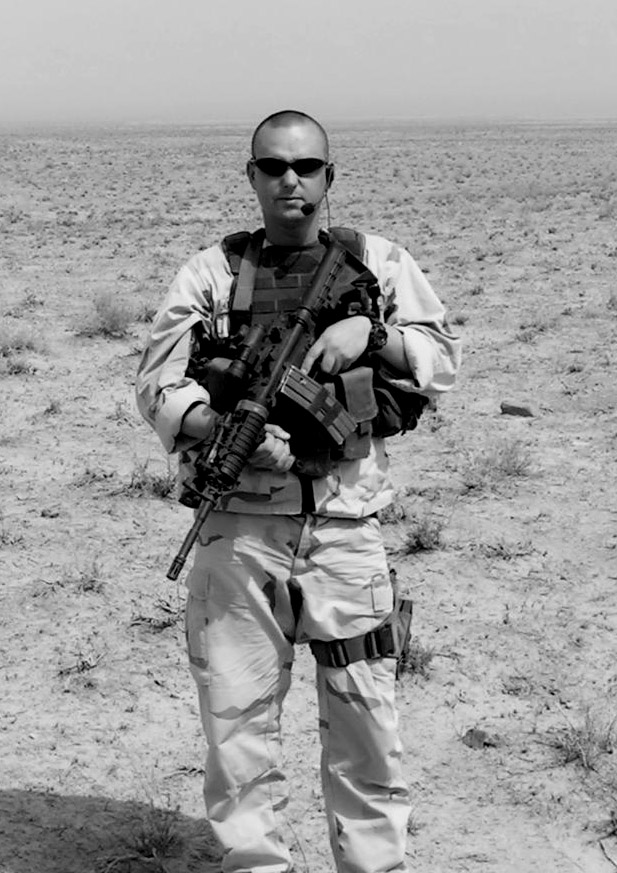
Security forces NCO earns Bronze Star with Valor

Only 20 minutes prior to the firefight Aug. 8, 2006 in Qalat Province, Afghanistan, Staff Sgt. Jason Kimberling had this photo taken of himself by a fellow Airman. Sergeant Kimberling was awarded a Bronze Star with valor and an Army Commendation Medal at Mountain Home Air Force Base, Idaho, July 19 for his actions in Afghanistan. Sergeant Kimberling was one of only three Americans in a coalition tasking with the Afghan national police and Army that was attacked. His actions prevented the entire coalition force from being split up during an ambush. Sergeant Kimberling is assigned to the 366th Security Forces Squadron at Mountain Home AFB.